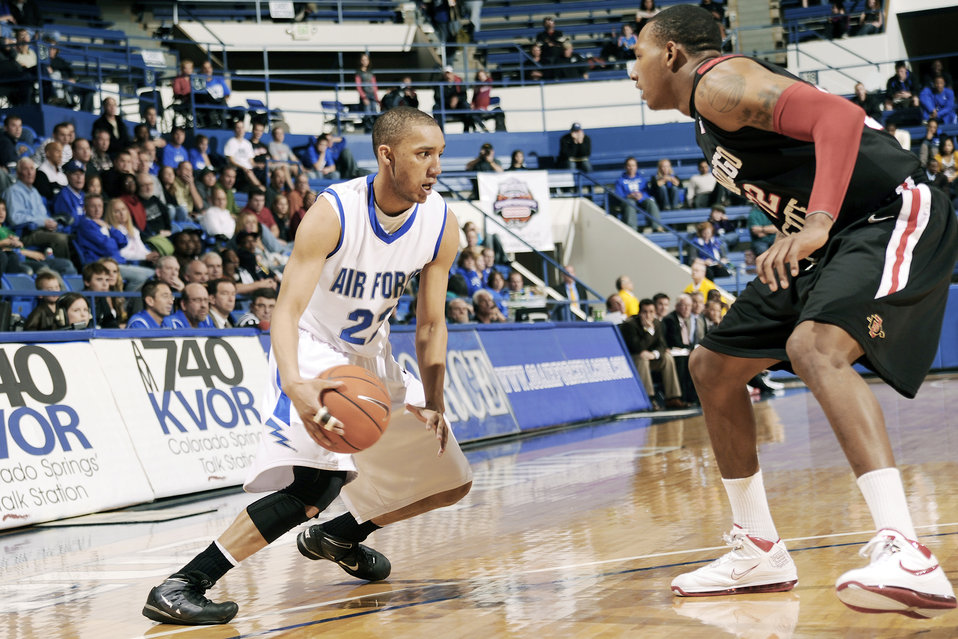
Air Force basketball falls to San Diego, 61-42.

Falcon senior guard Avery Merriex drives toward the basket as San Diego's Billy White, a junior forward, defends during the Falcon's game against San Diego March 6, 2010, at the U.S. Air Force Academy's Clune Arena in Colorado.